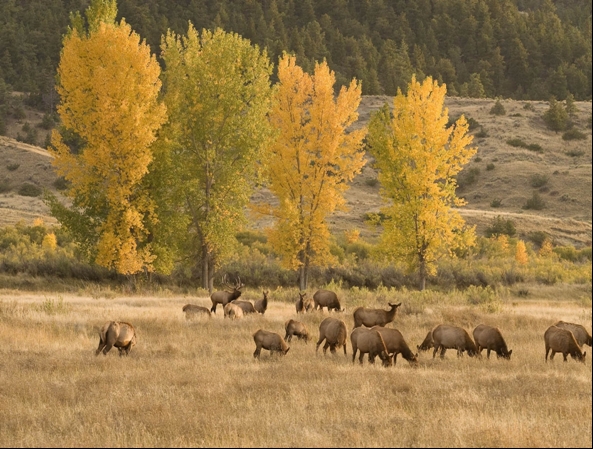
Elk Herd

Rocky Mountain elk were reintroduced on CMR in the 1950s and now number in the thousands.